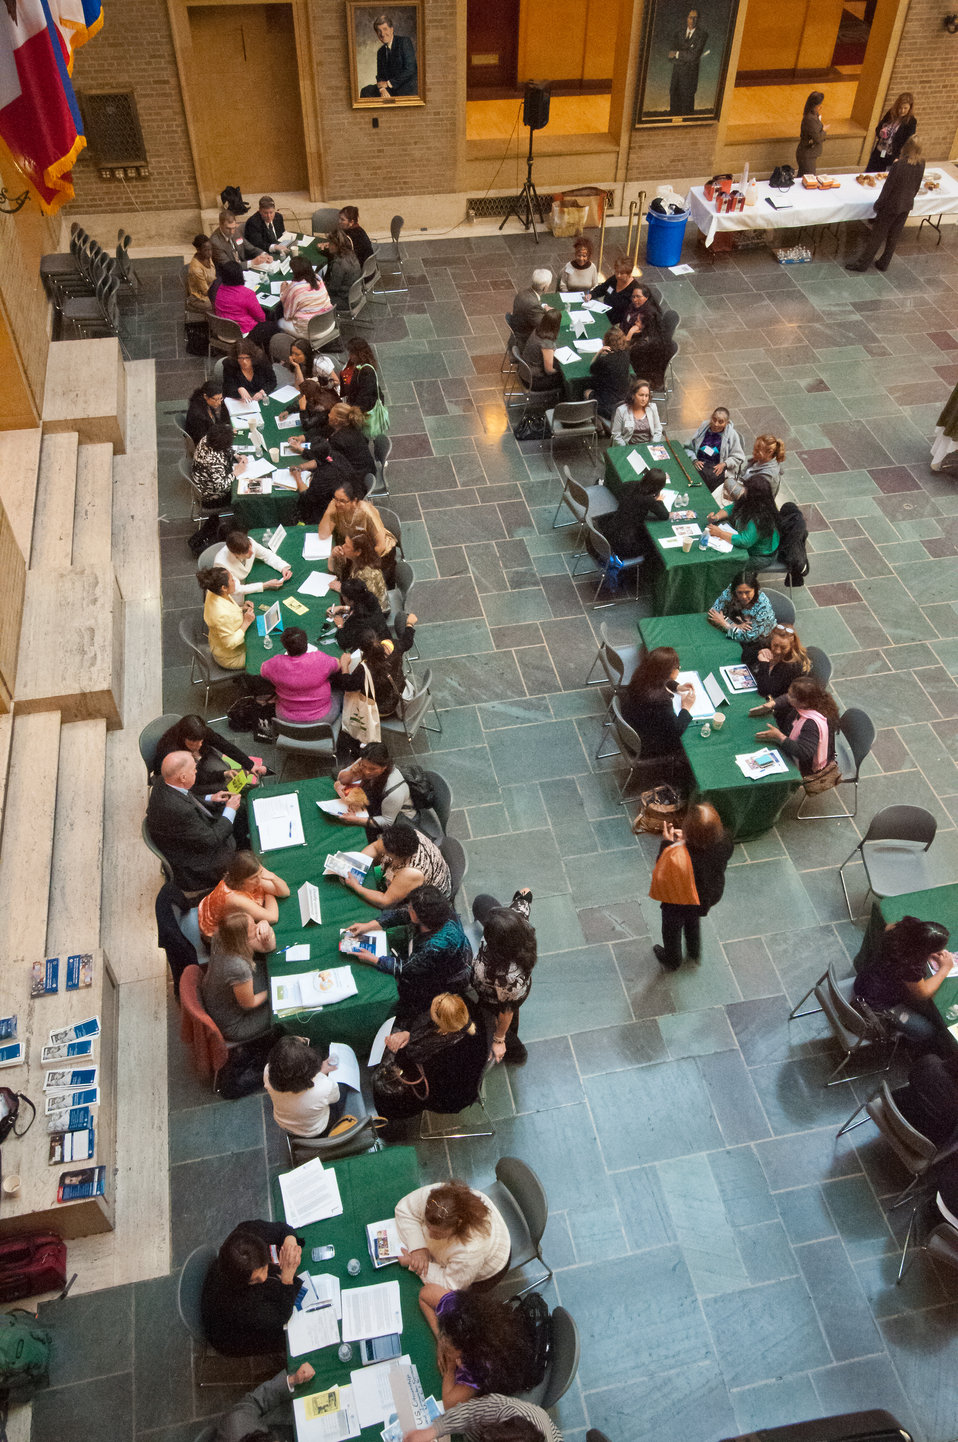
The United States Department of Agriculture (USDA), Office of Advocacy and Outreach hosted a Breakfast Networking Reception with Alianza Nacional de Campesinas an organization for Hispanic Farmworker Women to network and discuss their issues, priorities and opportunities in rural communities througout the United States in Washington, DC, Tuesday, April 9, 2013. The women were able to speak to representatives from nine Federal agencies with migrant programs: White House, USDA, Department of Health and Human Services (HHS), Housing and Urban Development (HUD), Department of Labor (DOL), Equal Employment Opportunity Commission (EEOC), Department of Education (DOE), Environmental Protection Agency (EPA) and United States Citizenship and Immigration Services.